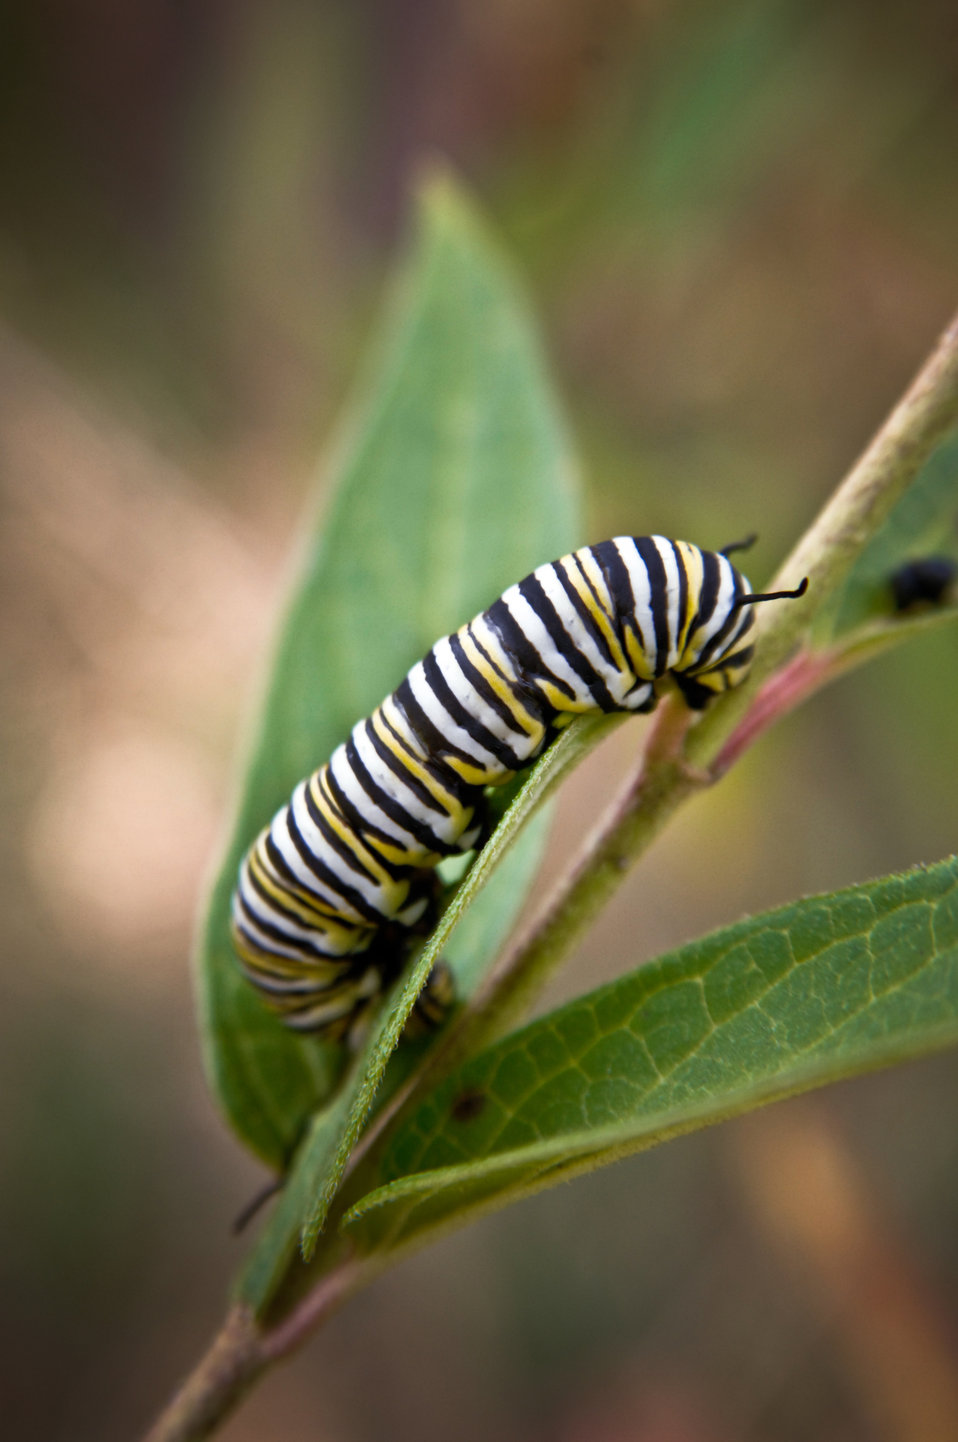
A monarch caterpillar crawls on a plant on a farm in Augusta County, Virginia on September 8, 2008.